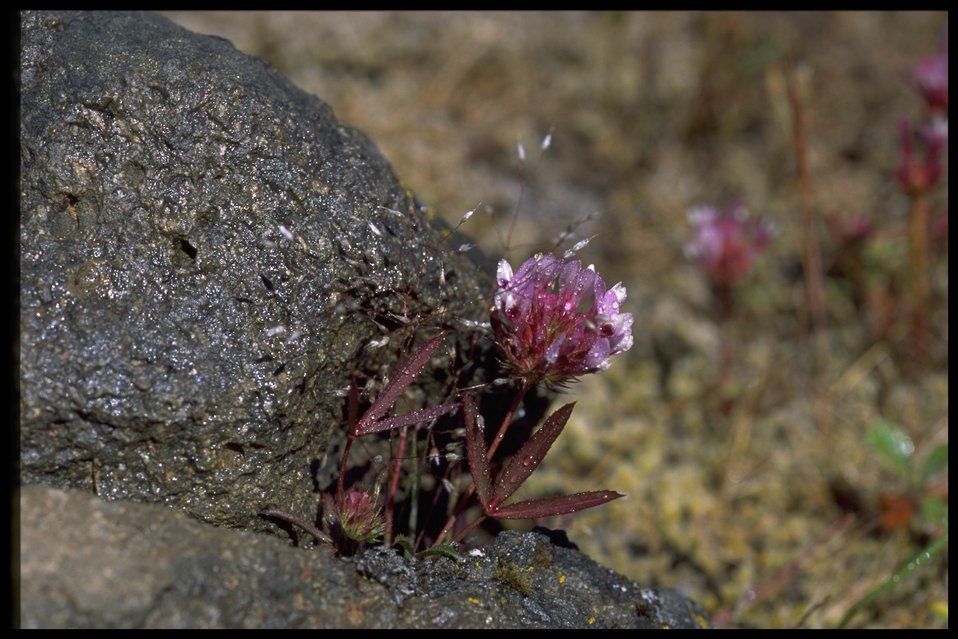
Closeup shot of Trifolium depauperatum.